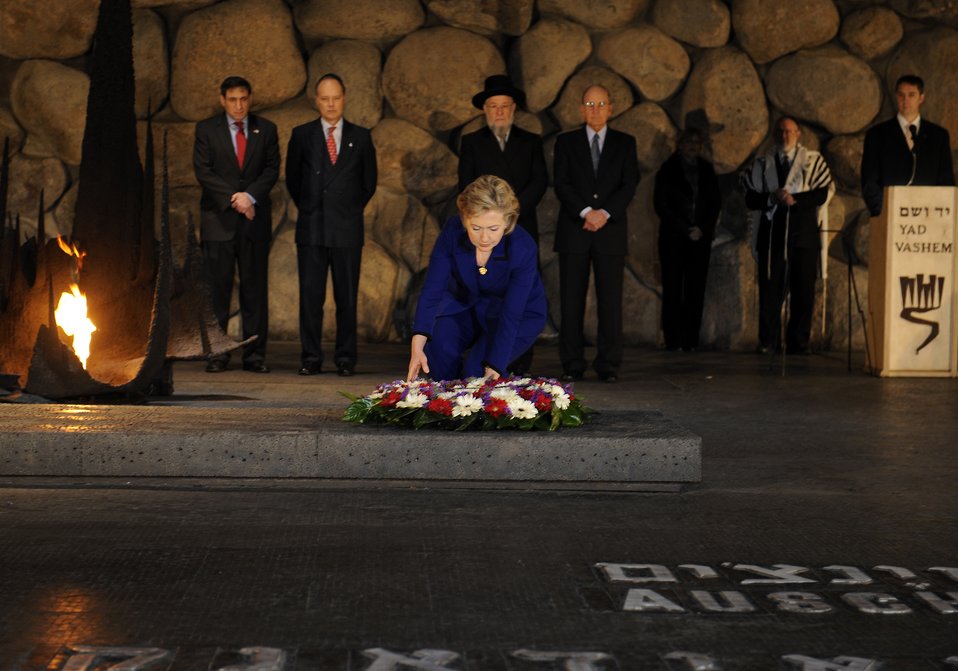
Secretary Clinton Lays a Wreath in the Hall of Remembrance

U.S. Secretary of State Hillary Clinton relights the eternal flame and lays a wreath in the Hall of Remembrance in Jerusalem March 3, 2009.